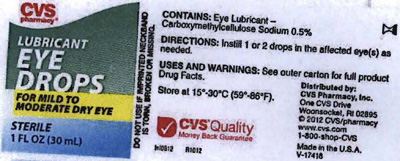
RECALLED – Lubricant Eye Drops, Carboxymethylcellulose Sodium 0.5% Ophthalmic Solution

September 6, 2013 – Product Recall – Altaire Pharmaceuticals, Inc. Issues Voluntary Nationwide Recall of 9 Lots of Carboxymethylcellulose Sodium 0.5% Ophthalmic Solution Sold Under Several Brands Because the Preservative May Not Be Effective Through Expiry.